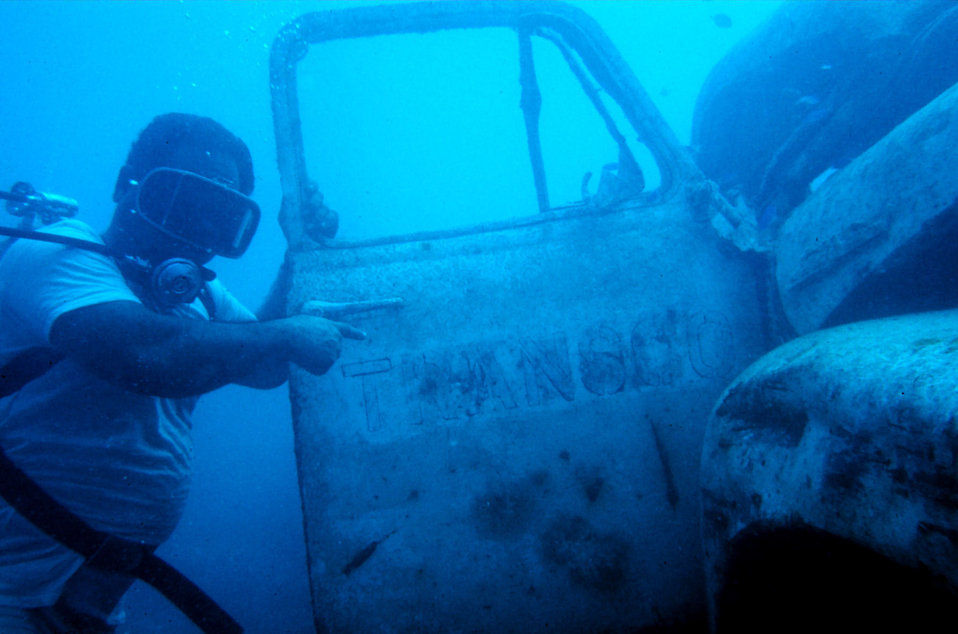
Truk native diving on artificial reef